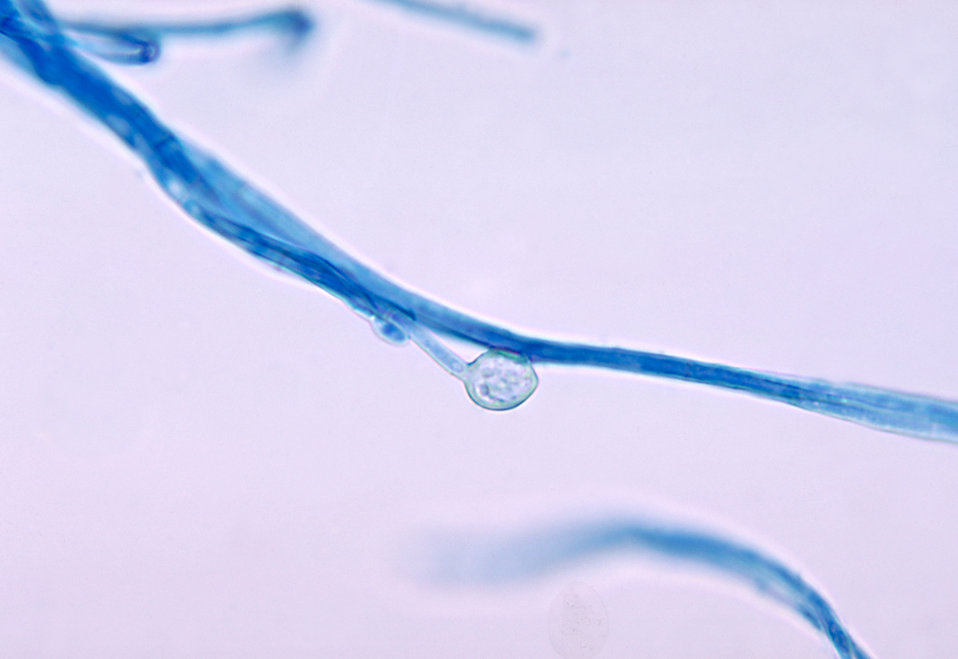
This micrograph reveals the terminal chlamydospores of the fungus Microsporum audouinii.